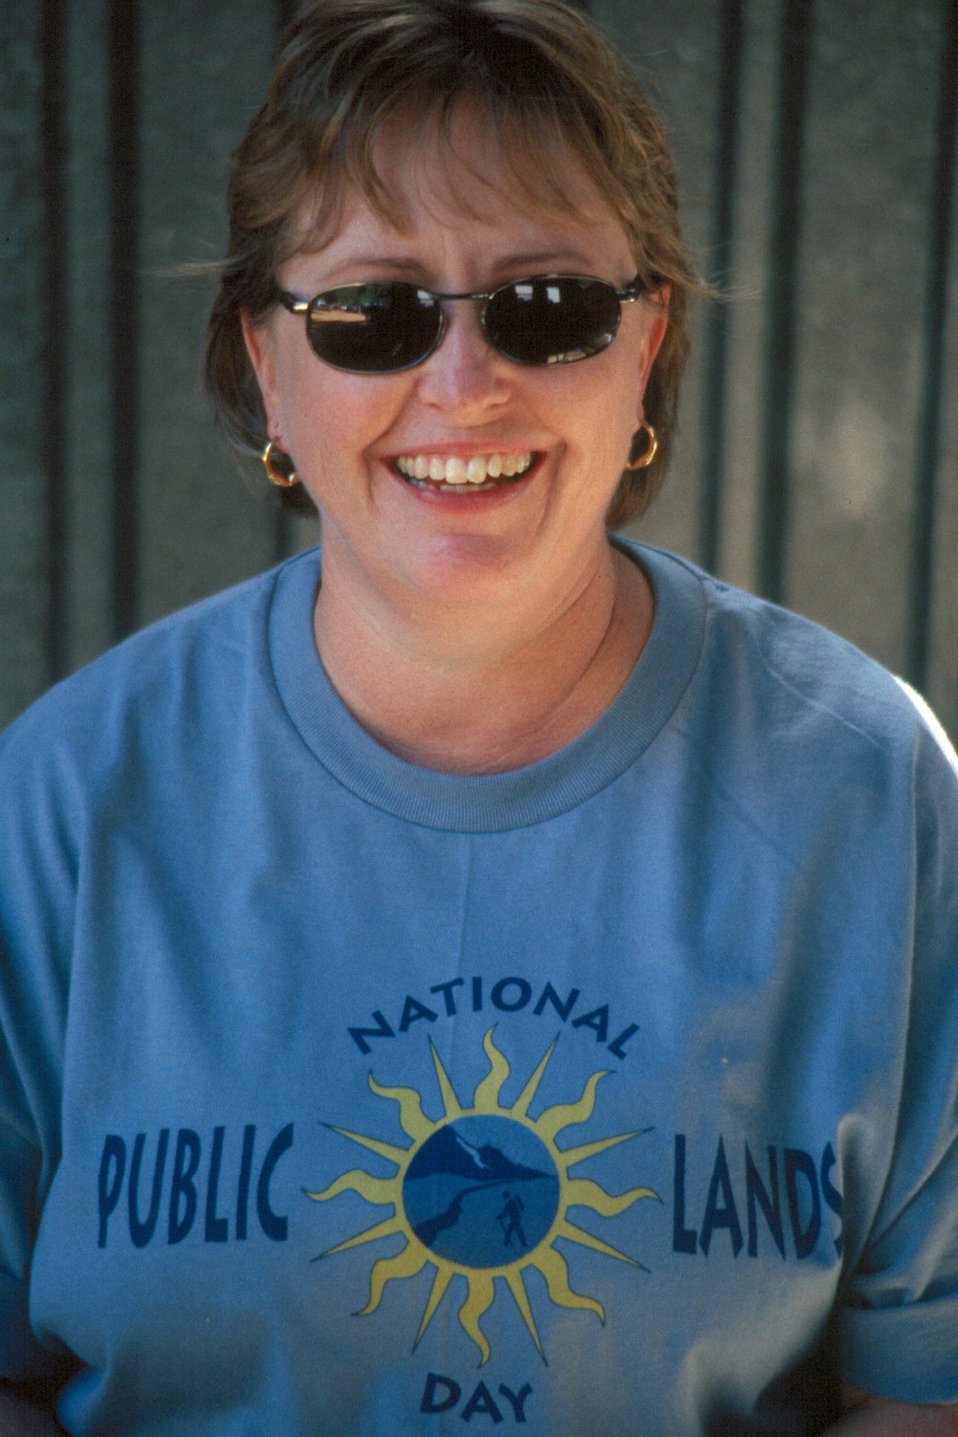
BLM employee, Pam Schiele, enjoying this event